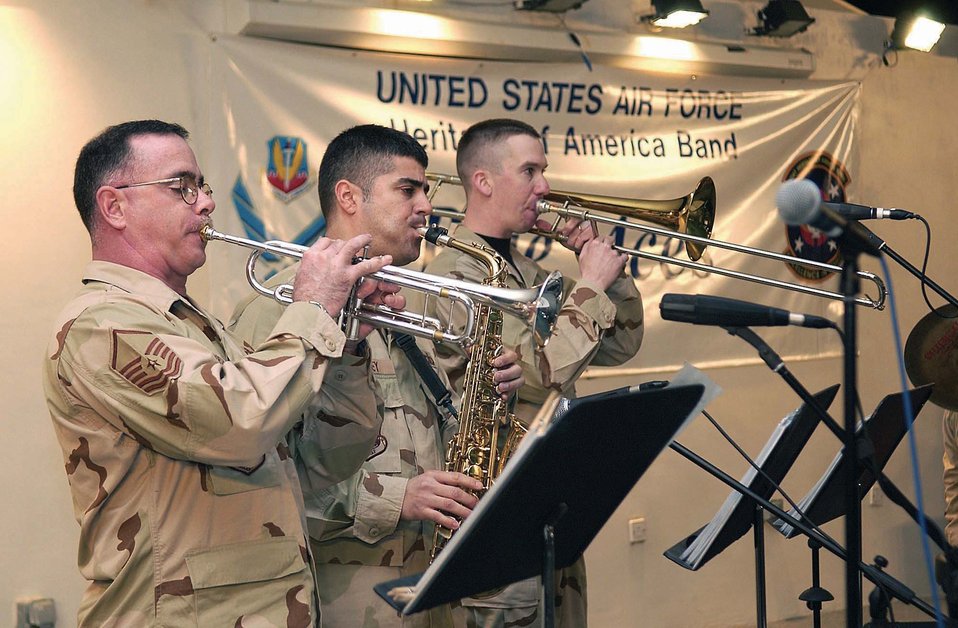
Blue Aces entertain deployed troops

SOUTHWEST ASIA -- The horn section of the Blue Aces performs the Ray Charles song,